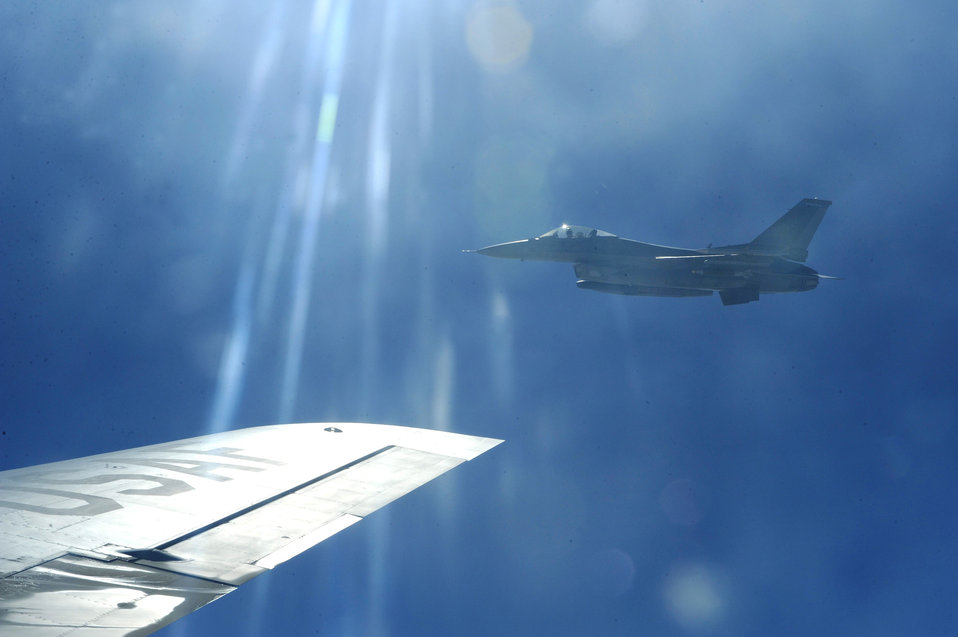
Refueling operations over Iraq

After refueling, the F-16CJ Fighting Falcon continues the mission over Iraq July 28 in support of Operation Iraqi Freedom.